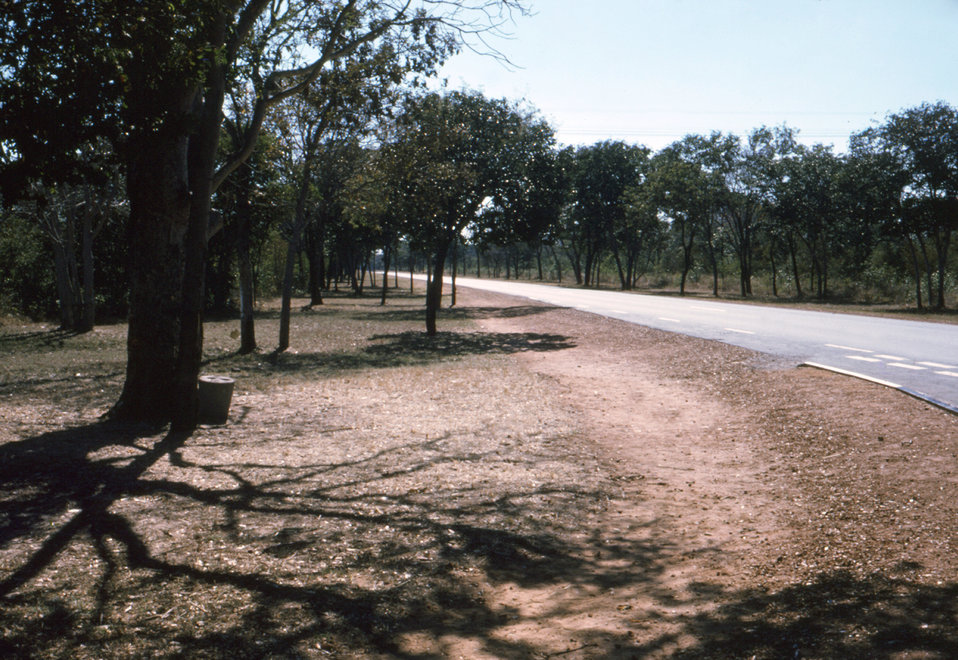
This roadside near the local Rhodesian, now Zimbabwean, airport was where two hitchhikers likely stopped for an undisclosed period during their travels through the country in 1975.